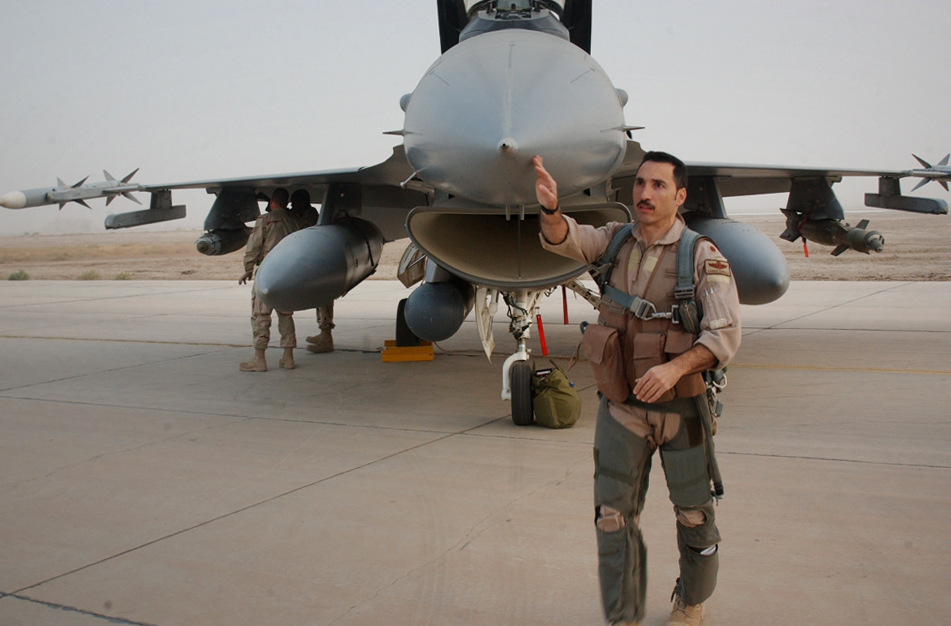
'Makos' support ground forces

ALI BASE, Iraq -- After spending the night here because of a weather diversion, Maj. Darren Censullo, an F-16 Fighting Falcon pilot, does a preflight walk around his aircraft before takeoff Oct. 18. A reservist, the major flies with the 332nd Expeditionary Fighter Squadron at Balad Air Base, Iraq. He is deployed from the 482nd Fighter Wing at Homestead Air Reserve Base, Fla. The fighters provide air support to Operation Iraqi Freedom coalition ground forces.